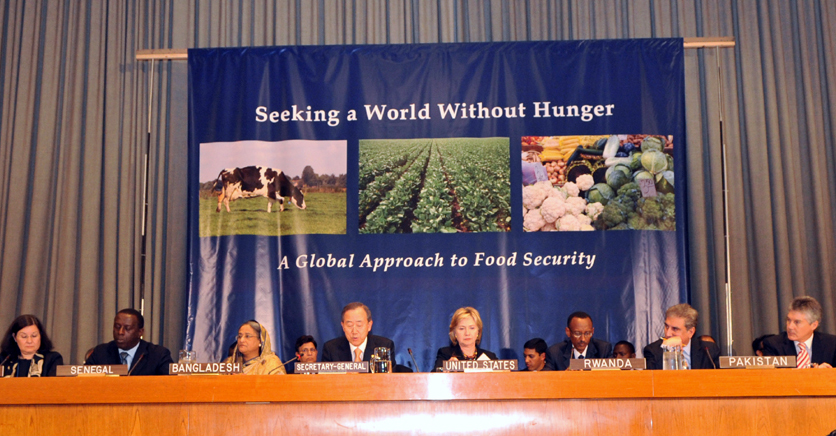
UNGA 2009: Food Security Forum

U.S. Secretary of State Hillary Rodham Clinton Secretary Clinton delivers remarks at a global Food Security event at the United Nations in New York City, New York September 26, 2009.